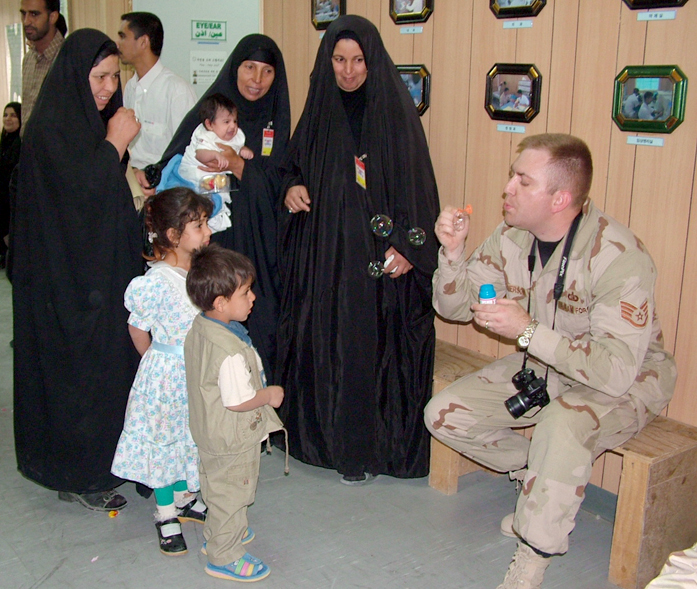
The power of play

TALLIL AIR BASE, Iraq -- Staff Sgt. Damian Pierson blows bubbles for Iraqi children during a trip to Jema Hospital here. The hospital, which is staffed by Korean nurses and doctors, gets about 50 patients a day. Sergeant Pierson is assigned to the 407th Expeditionary Communications Squadron, and he is deployed from Misawa Air Base, Japan.